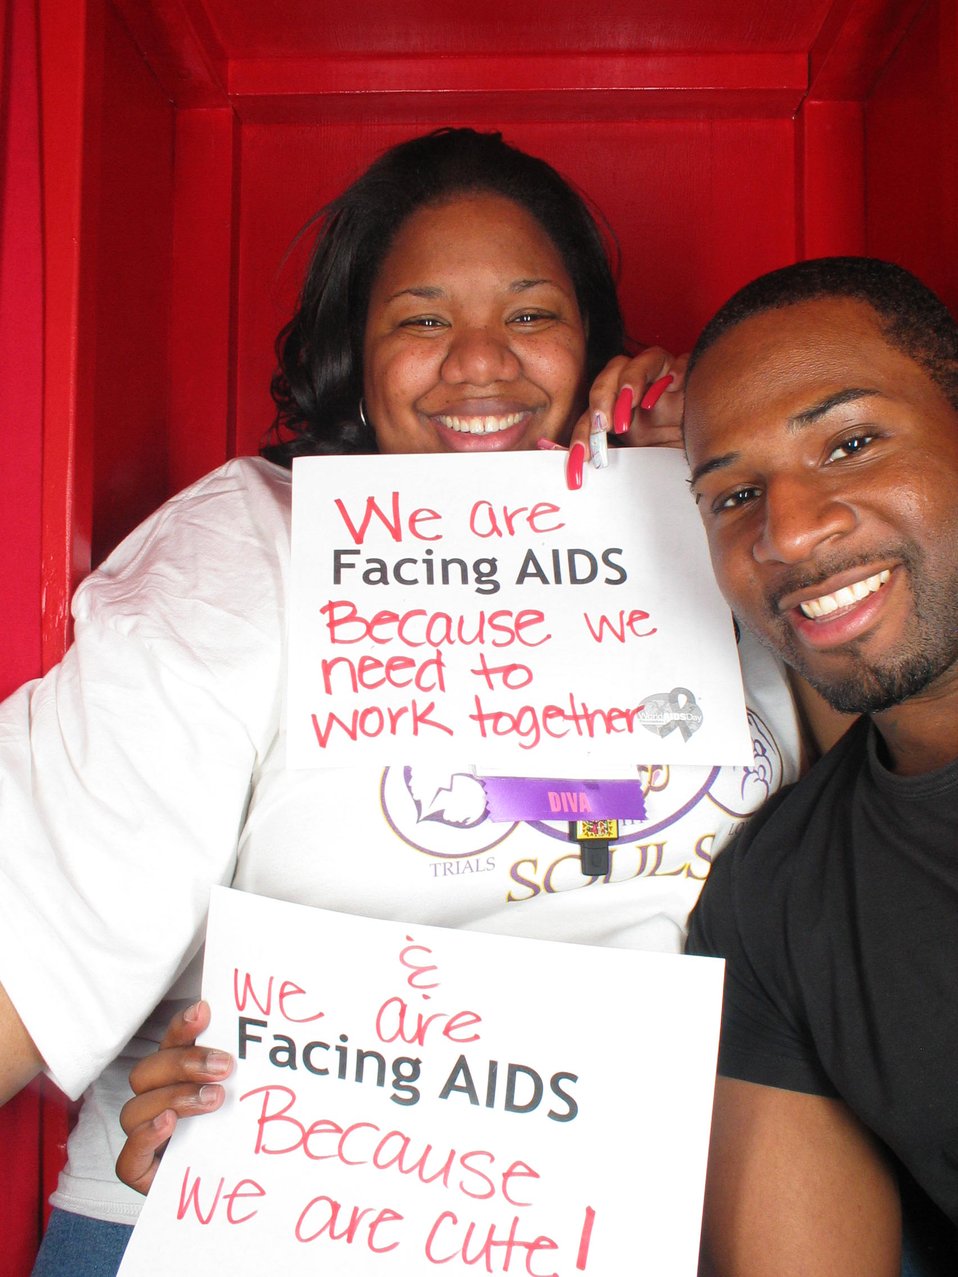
We are Facing AIDS because we need to work togehter and we are Facing AIDS because we are cute!